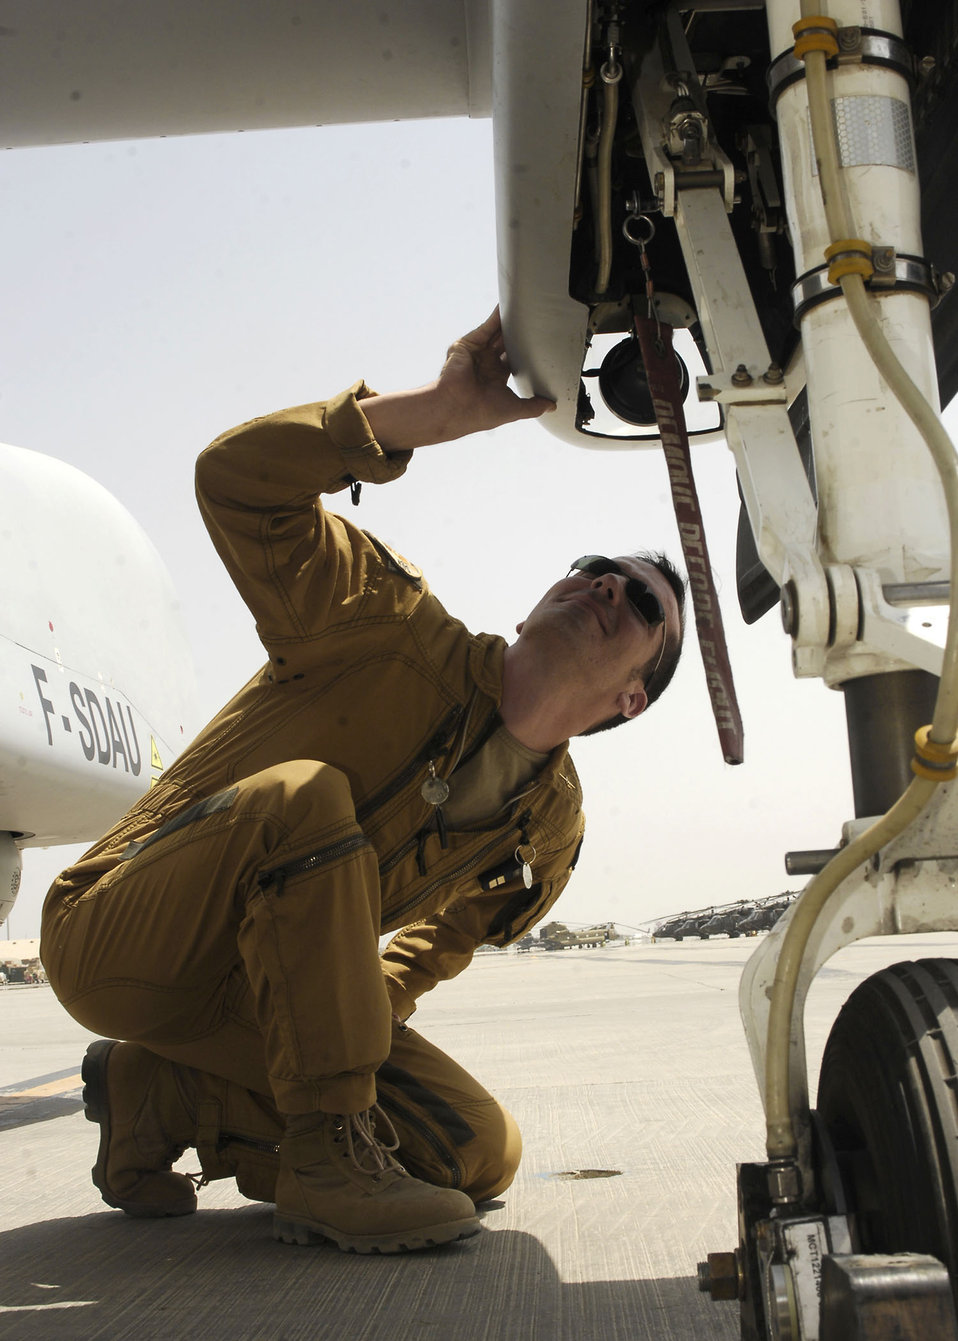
French unmanned aircraft protect Bagram Airmen

French air force 1st Lt. Nicolas Divry performs a preflight check to ensure the aircraft will function properly once it gets in the air July 11 at Bagram Airfield, Afghanistan. The squadron has the skills necessary to perform operational day and night intelligence gathering missions that benefit coalition troops. Lieutentant Divry is a pilot from the French air force unmanned aircraft operational squadron deployed to Bagram Airfield .